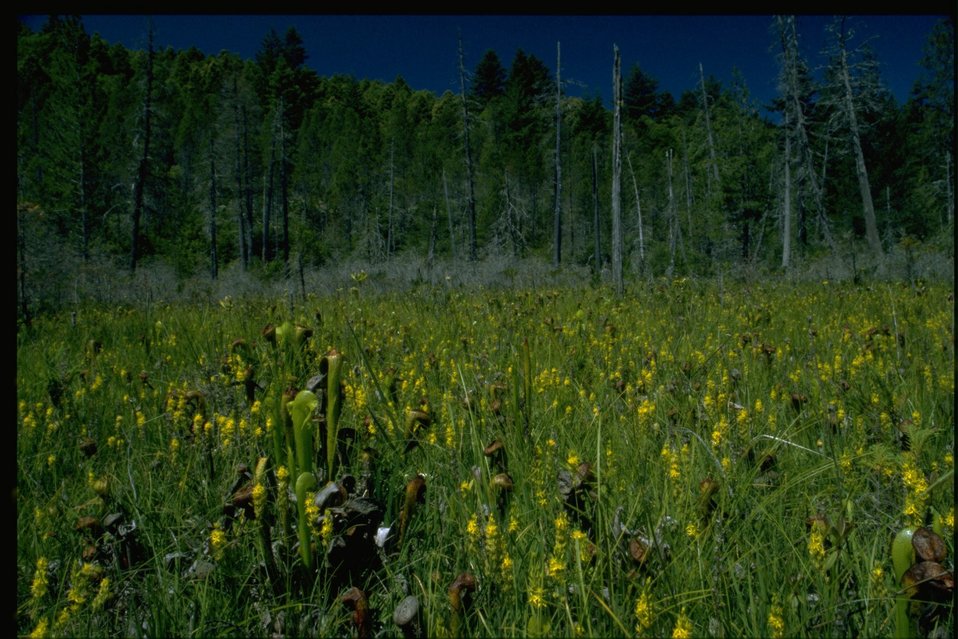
Farshot of Darlingtonia.